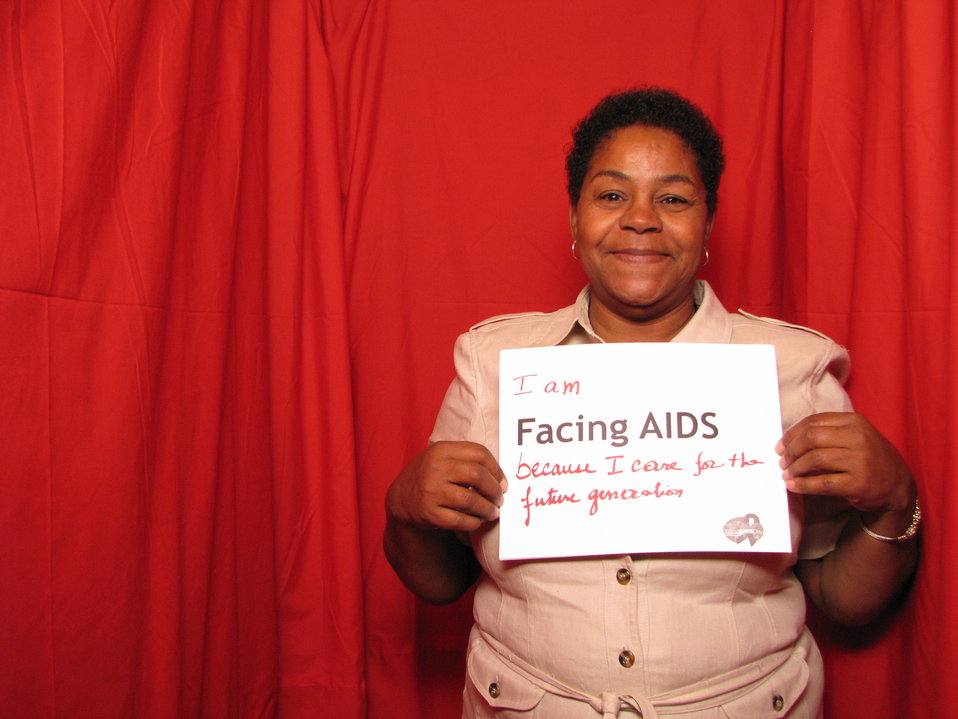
I am FACING AIDS because I care for the future generations!

From the AIDS.gov photo booth at the U.S. Conference on AIDS, September 2010 (Orlando, FL).